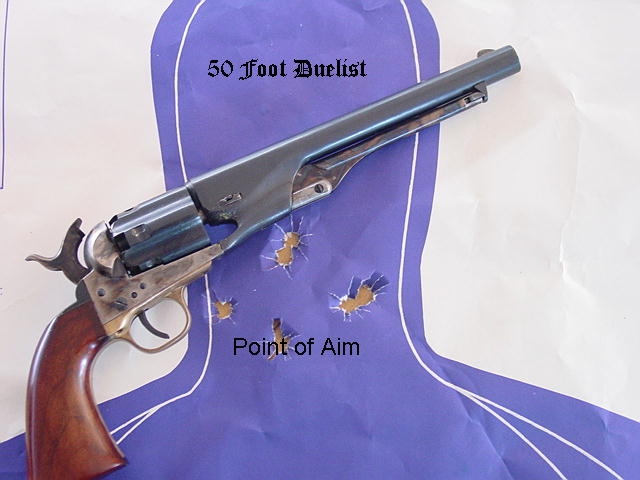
1860 Army (Uberti Replica)With fluetted cylinder. Shot one-handed at 60 feet